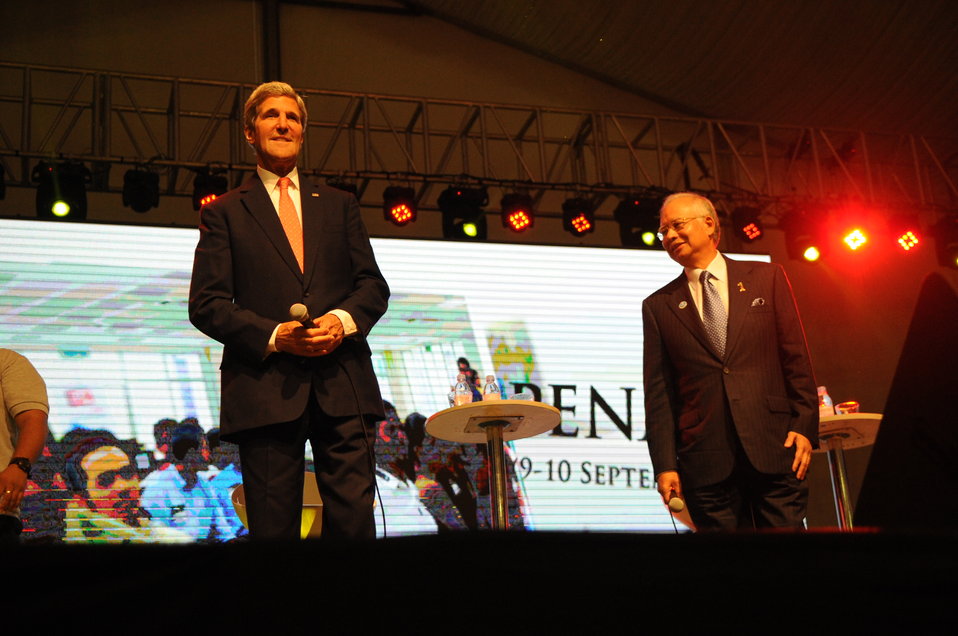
Secretary Kerry, Prime Minister Najib Address 1MET Kick-Off

U.S. Secretary of State John Kerry and Malaysian Prime Minister Najib Razak are greeted by over 4,700 young people gathered for the 1MET Kick-Off, held as part of the Global Entrepreneurship Summit in Kuala Lumpur on October 11, 2013.